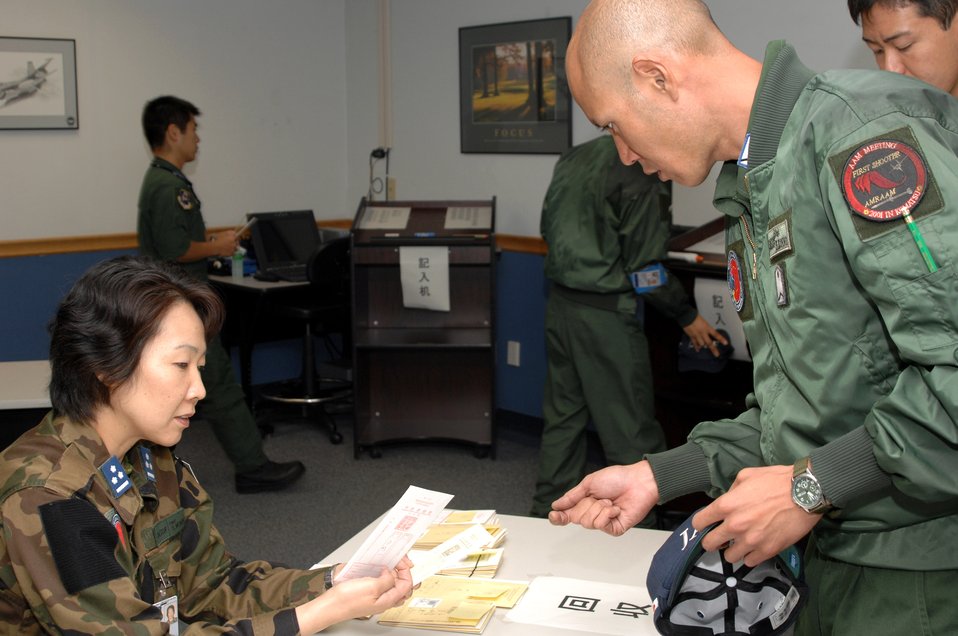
Japanese absentee voting at Red Flag-Alaska

The members of the Japan Air Self-Defense Force's 7th Air Wing, at Eielson Air Force Base, Alaska, to participate in Red Flag-Alaska 07-3, were able to vote in their country's official elections July 23rd at an absentee voting area set up on the base.